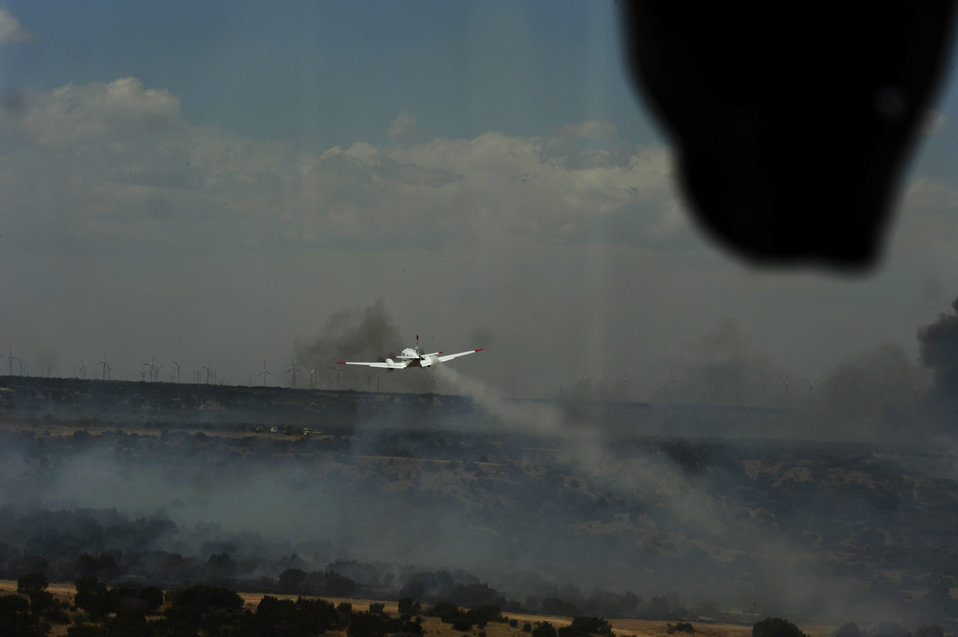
Texas Wildfires

A U.S. Forest Service King Air lead plane guides a C-130 Hercules from the California Air National Guard’s 146th Airlift Wing April 26, 2011, during firefighting operations in Scurry County, Texas. The lead planes guide aircraft equipped to dispense fire retardant to ensure that the retardant is dispensed where it is needed. Wildfires have spread across various parts of Texas and have burned more than 1,000 square miles of land.